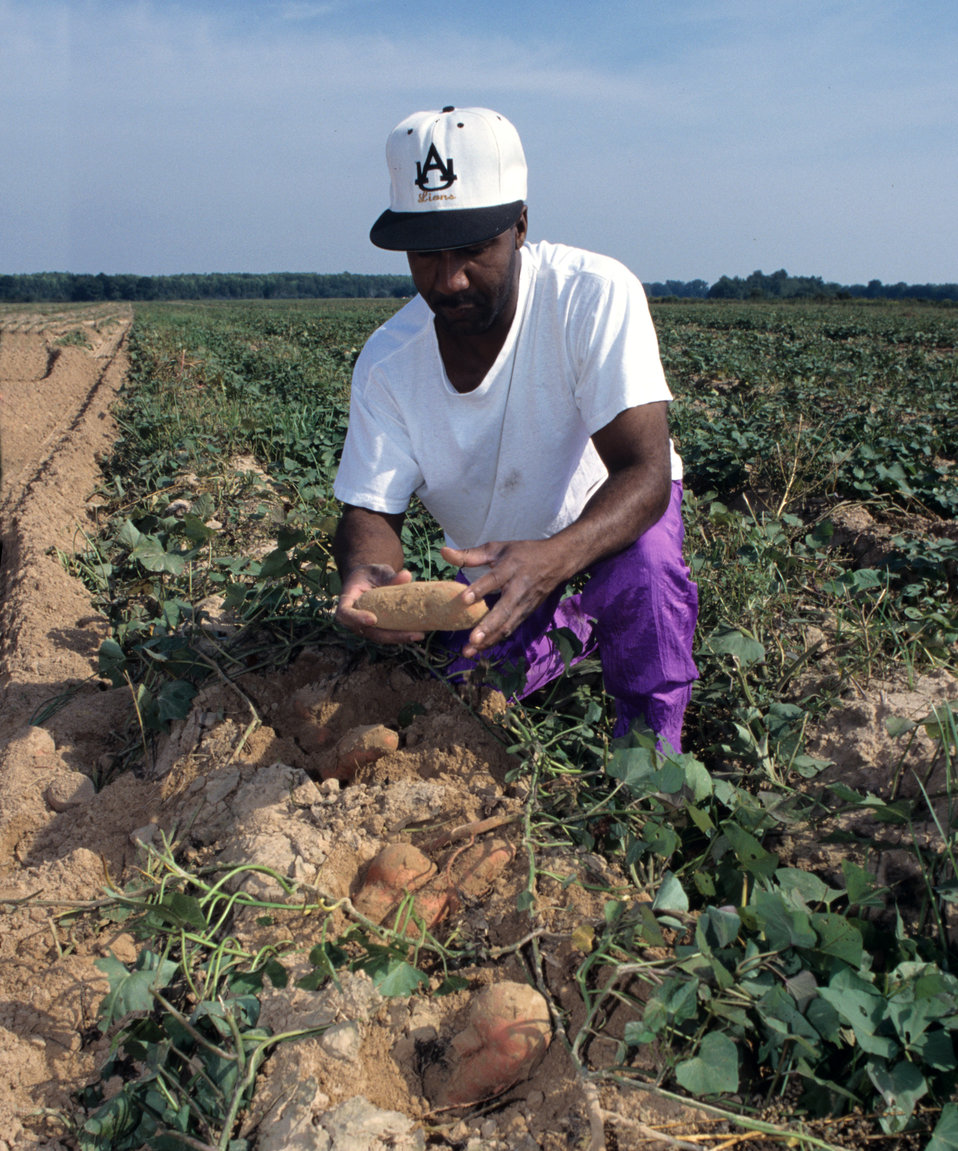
Farmer harvests his sweet potato crop in TX on September 2, 1996.